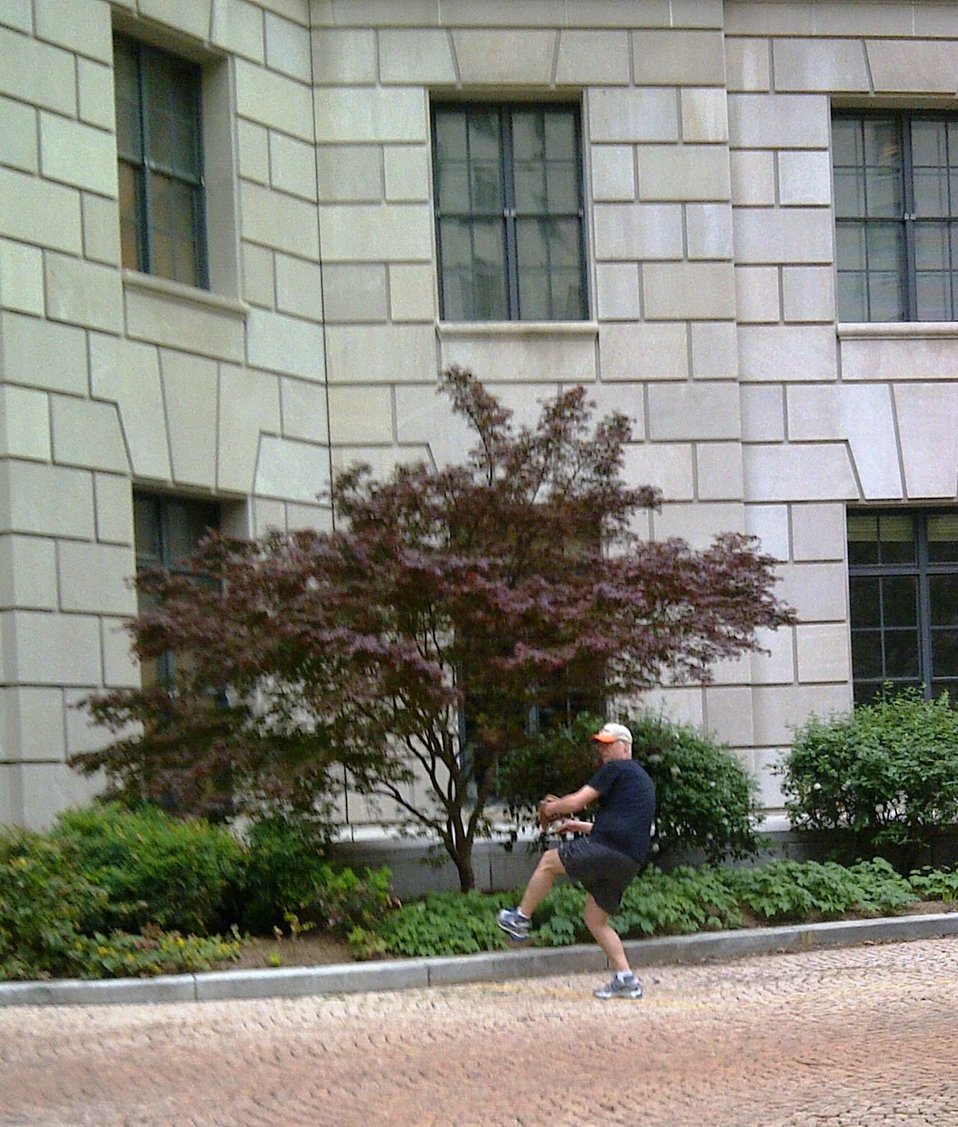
April 19, 2013 - Courtyard Practice for EPA Acting Administrator Bob Perciasepe

Getting his game on, Acting Administrator Bob Perciasepe takes a moment to practice his pitch.

Earth Day was spent celebrating with school children and throwing the first pitch for the Washington Nationals game.

Keep up with our Acting Administrator @ www.facebook.com/EPAadmin